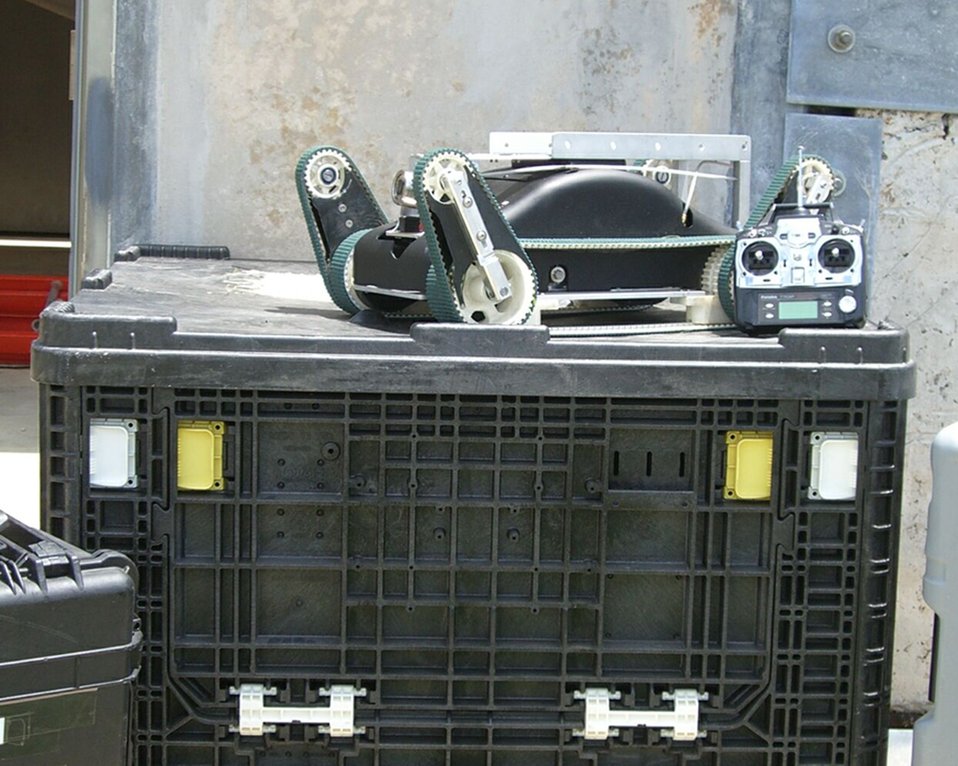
'Nitty-Gritty' but Vital Data Helps Field Rescue Robots

Urban search and rescue robot and its control unit sit atop one of the packing crates stipulated in a new ASTM International standard designed to help first responders manage storage and transportation logistics.